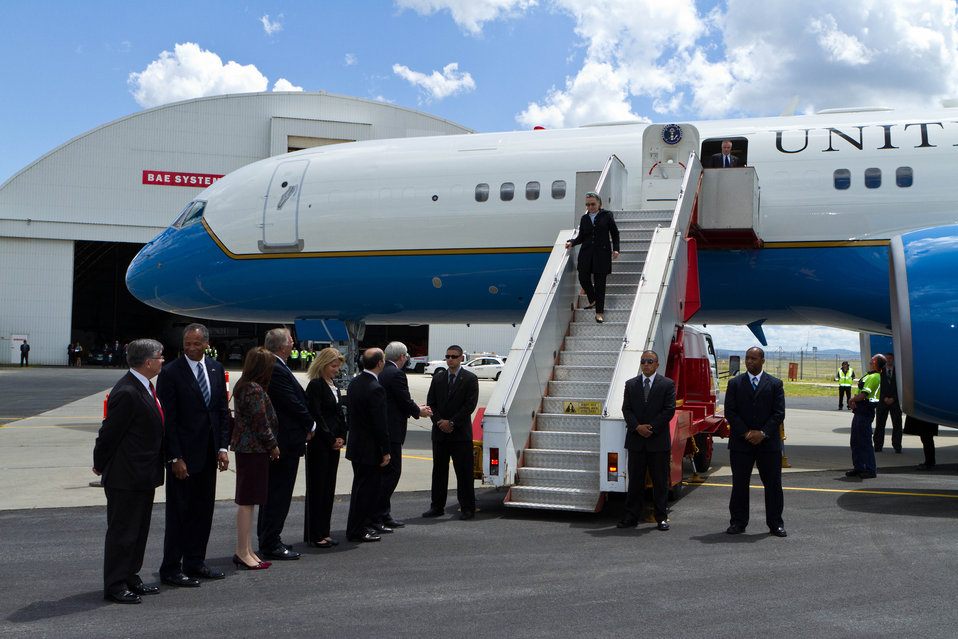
Secretary Clinton Arrives in Melbourne

U.S. Secretary of State Hillary Rodham is greeted by (from right to left) Australian Foreign Minister Kevin Rudd, U.S. Ambassador to Australia Jeff Bleich, Mrs. Bleich, Australian Ambassador to the U.S. Kim Beazley, Secretary for the Victorian Department of Premier and Cabinet Helen Silver, U.S. Consul General to Australia Michael Thurston, and First Assistant Secretary for the Americas at DFAT, Bill Tweddell at the Melbourne Airport in Melbourne, Australia, on November 7, 2010.